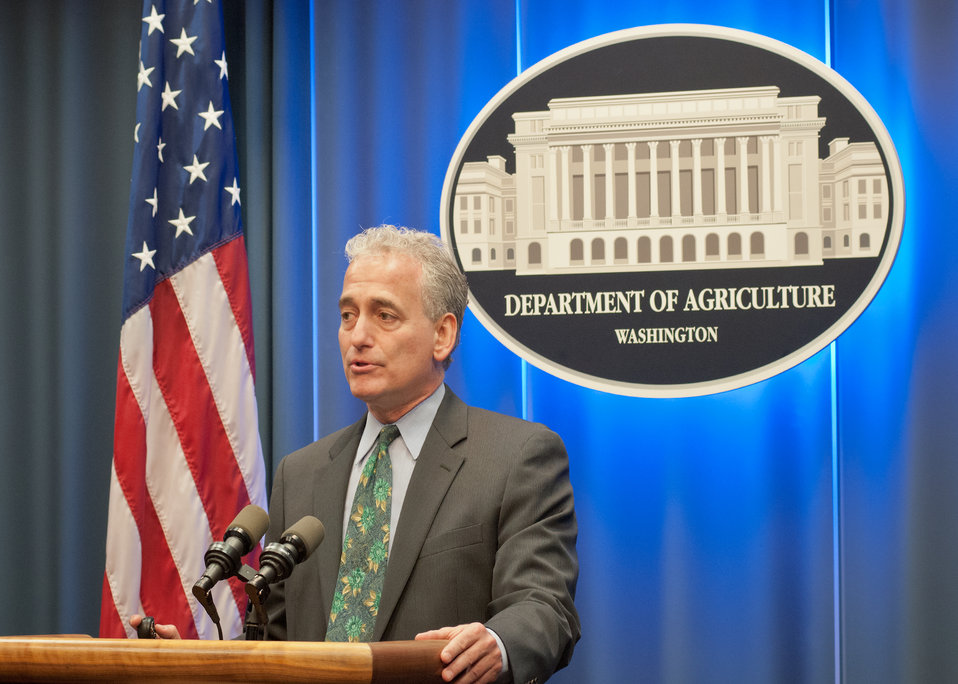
Jim Slama, President and Founder, FamilyFarmed.org’s On-Farm Food Safety Project presented a brief overview of the online risk management tool www.onfarmfoodsafety.org with Agriculture Deputy Secretary Dr. Kathleen Merrigan and leaders from agriculture and food organizations at the United States Department of Agriculture in Washington, D.C., on Thursday, December 15, 2011. Slama said, “Wholesale buyers are increasingly requiring that farms adopt and quantify best practices in food safety, we created this tool in order to give farmers access to a system that allows them to meet the needs of these buyers while minimizing risks.” The On-Farm Food Safety Project is the first of its kind and was developed by a broad coalition of farm and produce industry partners with lead funding from the USDA Risk Management Agency.